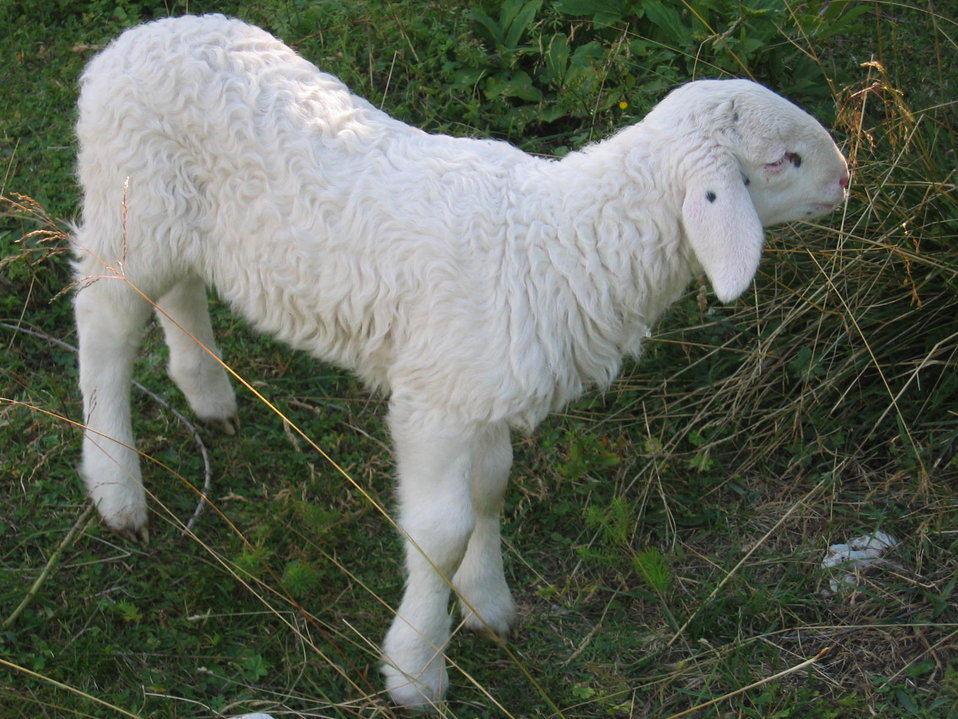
Slovenščina: Jagnje.